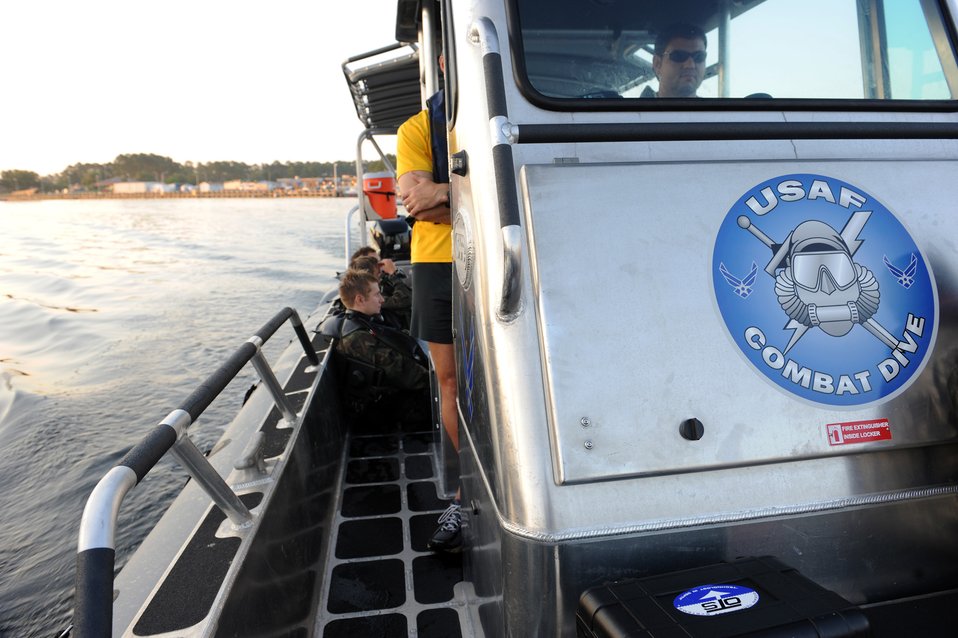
Combat Controllers

Airmen sit in a boat as they wait to be transported back to their unit after completing an early morning dive during their combat dive course June 10, 2010, at Panama City Beach, Fla. The Airmen are combat controllers-in-training assigned to the 342nd Training Squadron Det. 2.